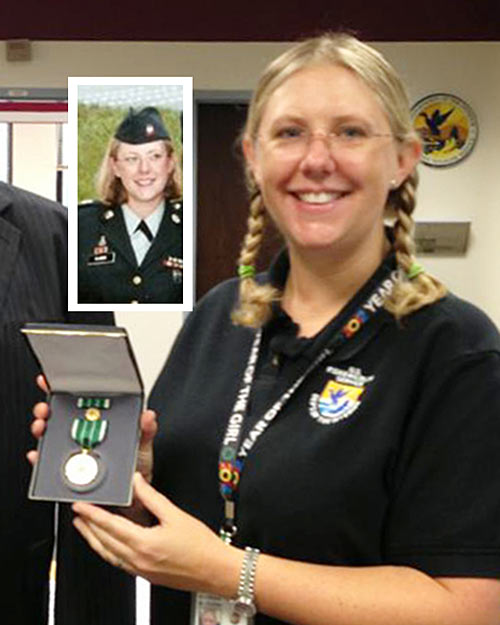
Kate Blough-Southeast Region

Veteran Kate Blough works at the Port of Louisville as a Law Enforcement Support Assistant.